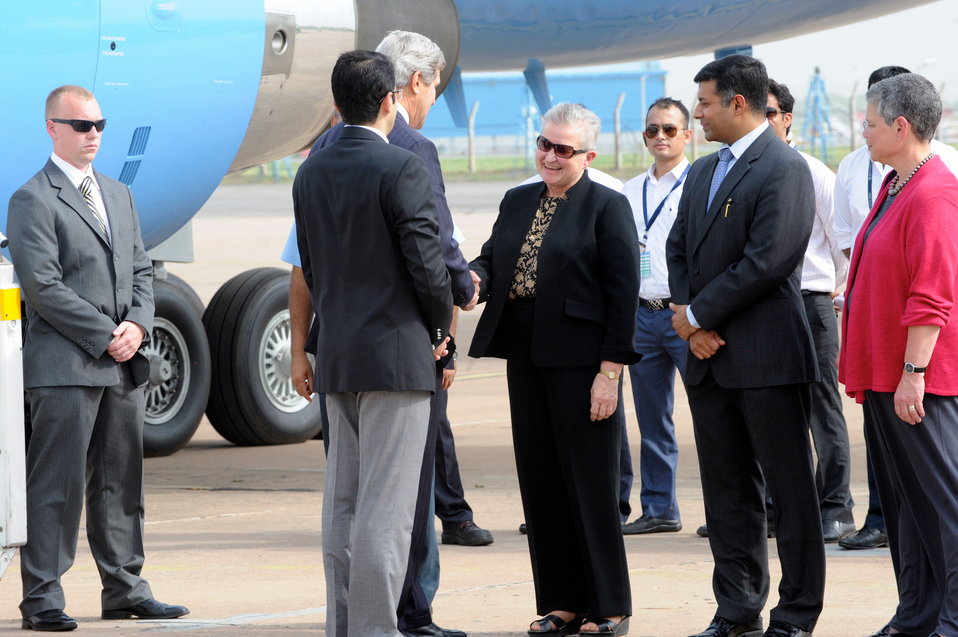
Secretary Kerry Arrives in New Delhi, India

U.S. Secretary of State John Kerry is greeted by U.S. Ambassador to India Nancy Powell and Government of India officials upon his arrival in New Delhi, India on June 23, 2013.